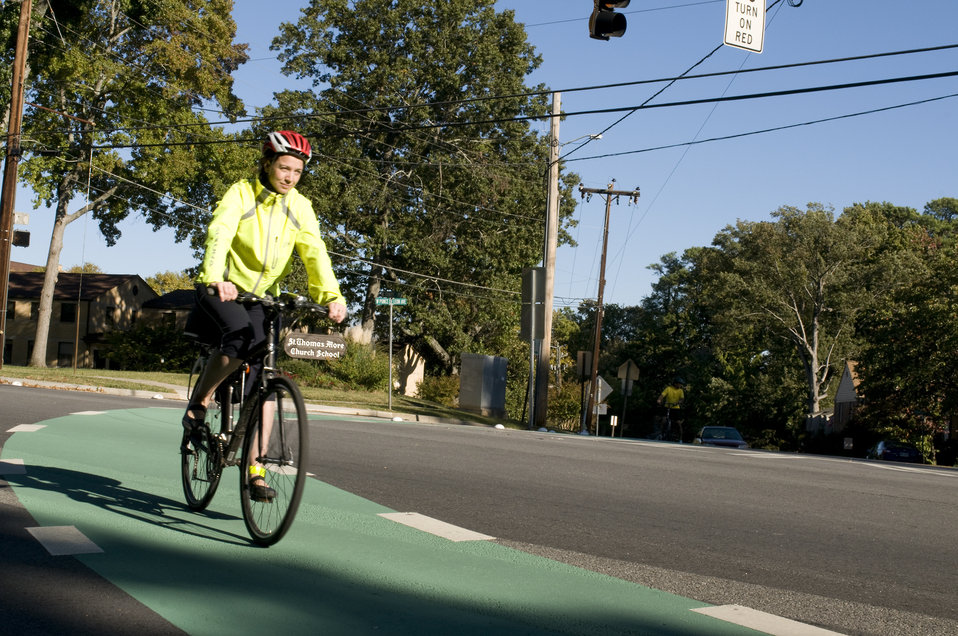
Photographed on a sunny Georgia day this female bicyclist had embarked on a morning bicycle ride. Note the brightly-colored windbreaker she was wearing, which would help drivers see her more easily, as well as the protective, aerodynamic helmet, and the snug leggings, all adding to an overall safer bike ride. Also important, is that she was riding in the designated bicycle traffic lane, and abiding by the proper rules of the road, which govern drivers of both bicycles, and motorized vehicles.